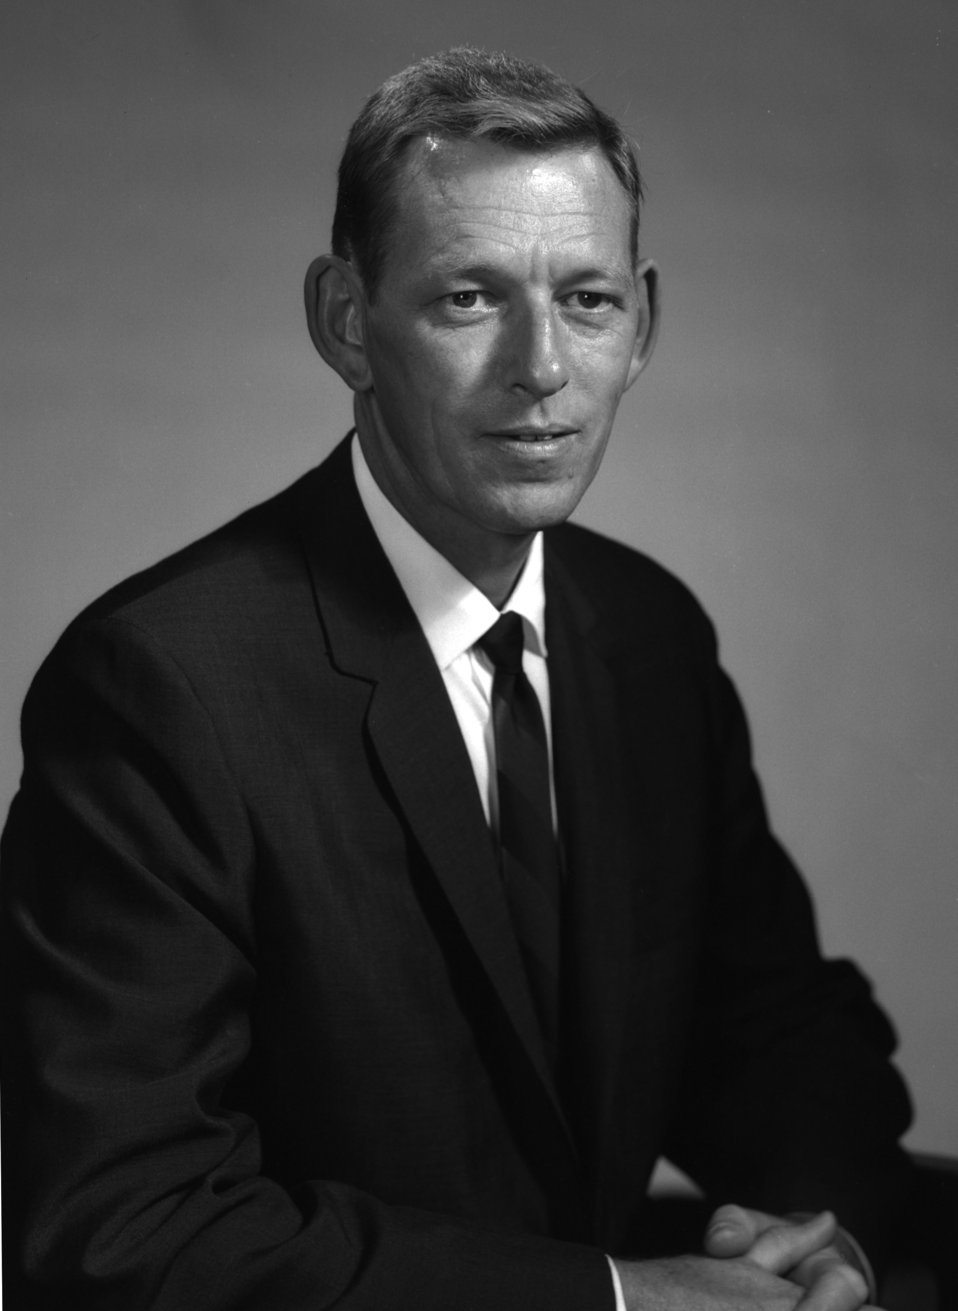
AEC Photographer Ed Westcott

Oak Ridge Tennessee 8/6/1966